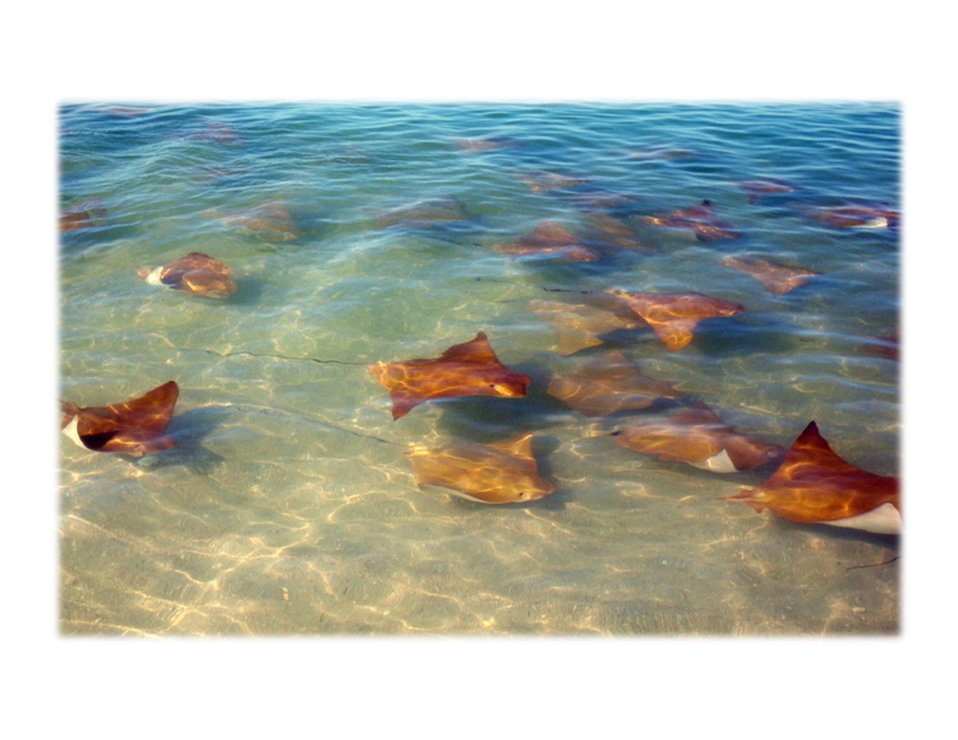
Manta rays near shore, Louisiana